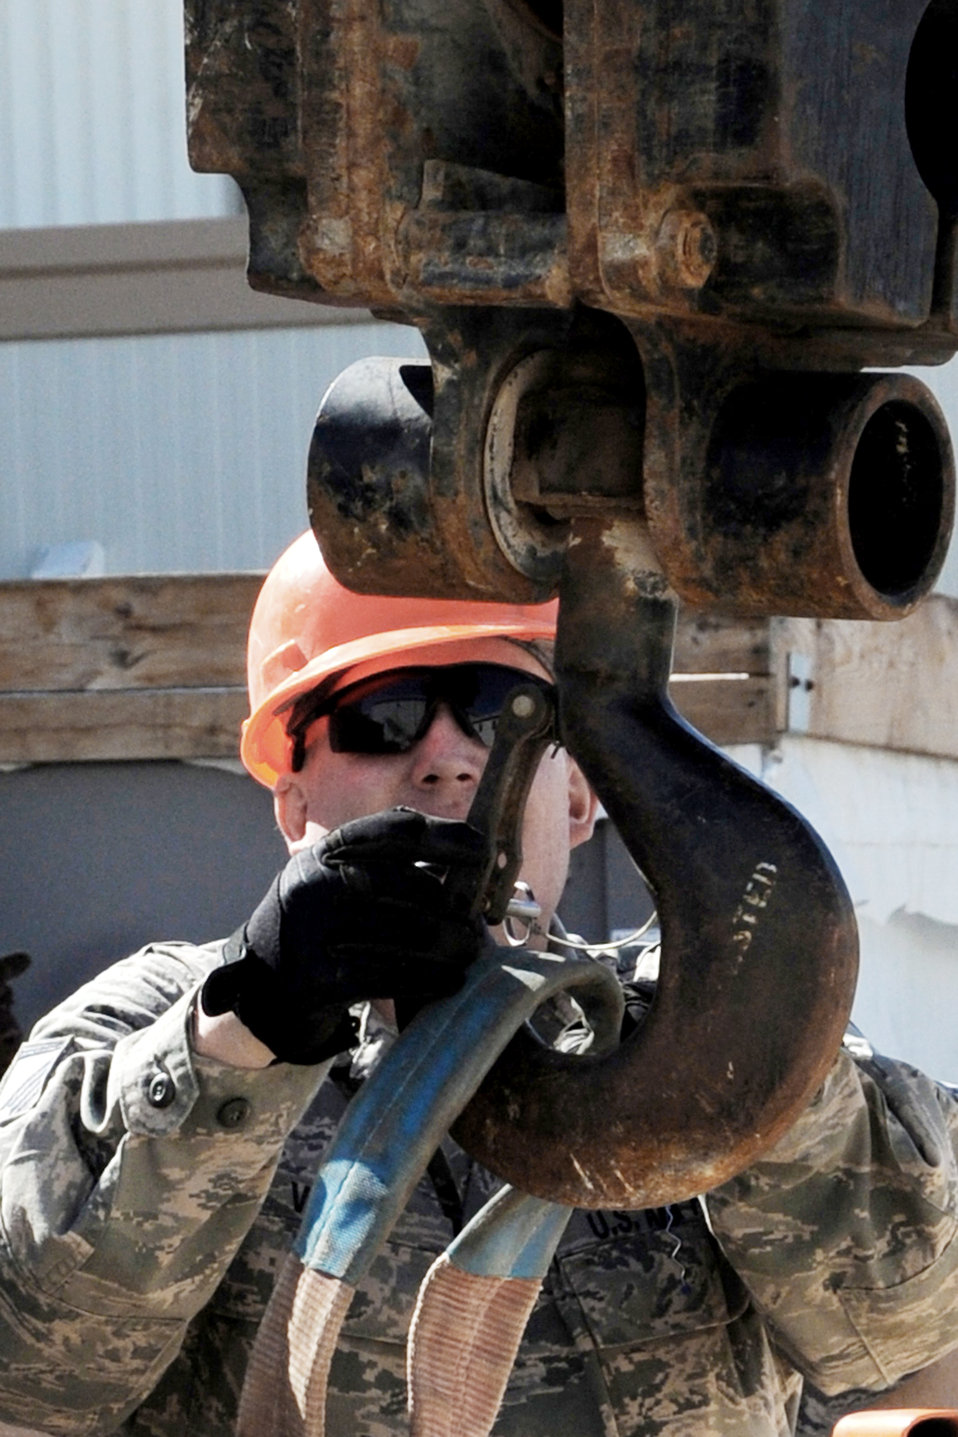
Get the hook up

Master Sgt. Mark Voss hooks up a sling to a crane to remove an air conditioning unit from the dining facility at an air base in Southwest Asia Feb. 10, 2010. A new unit was installed before summer temperatures rise. Sergeant Voss is with the 380th Expeditionary Civil Engineer Squadron.